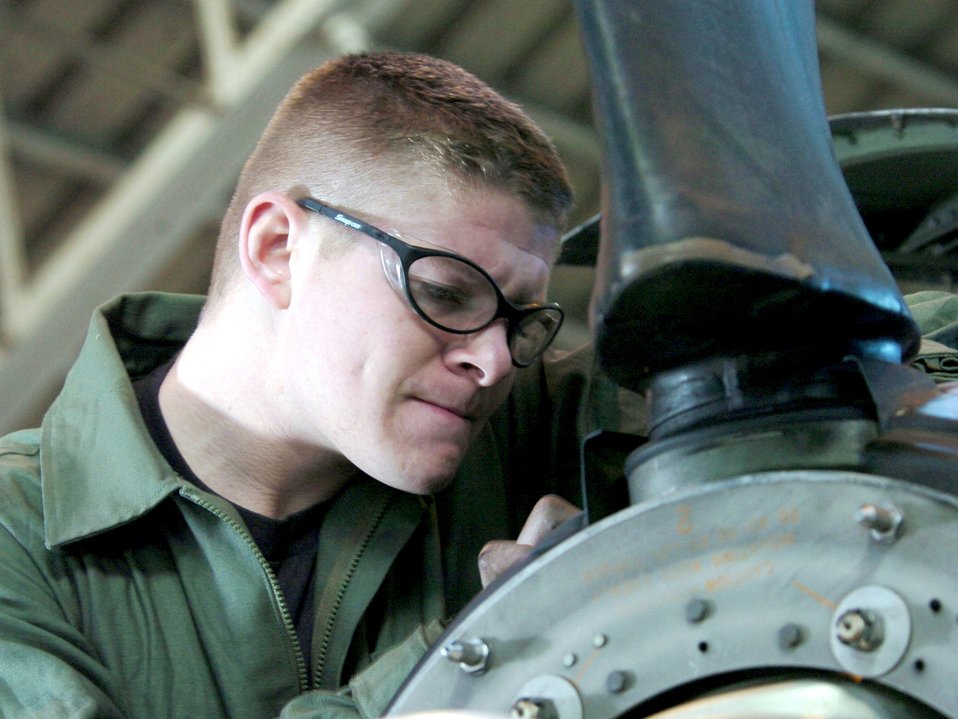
Check it out

YOKOTA AIR BASE, Japan -- Airman 1st Class Matthew McGonagle checks a C-130 Hercules engine. The Airman and others in the 374th Maintenance Squadron's isochronal section conduct a rigorous annual check to ensure that the Pacific Air Force C-130 fleet is in top condition. Airmen McGonagle is an engine specialist.